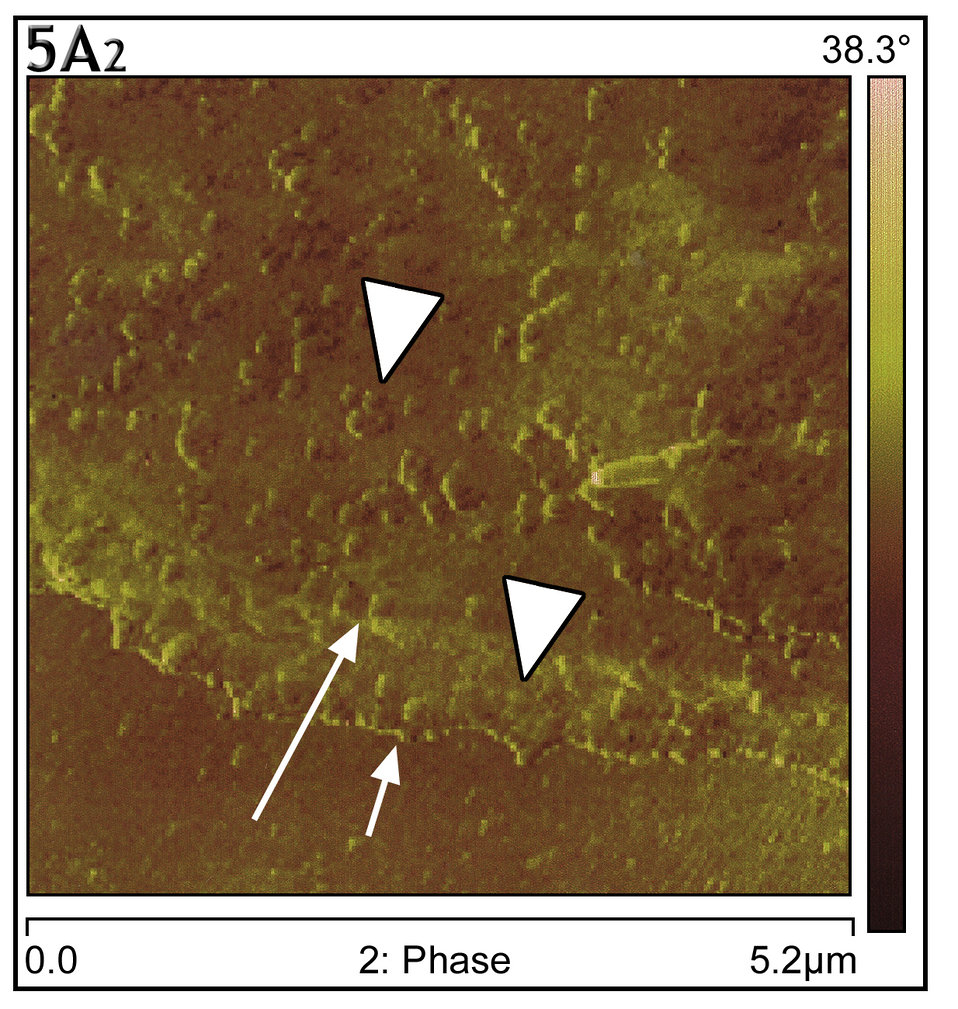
This atomic force microscopy image shows a thickened, layered configuration found at the edge of infected Vero E6 culture cells.